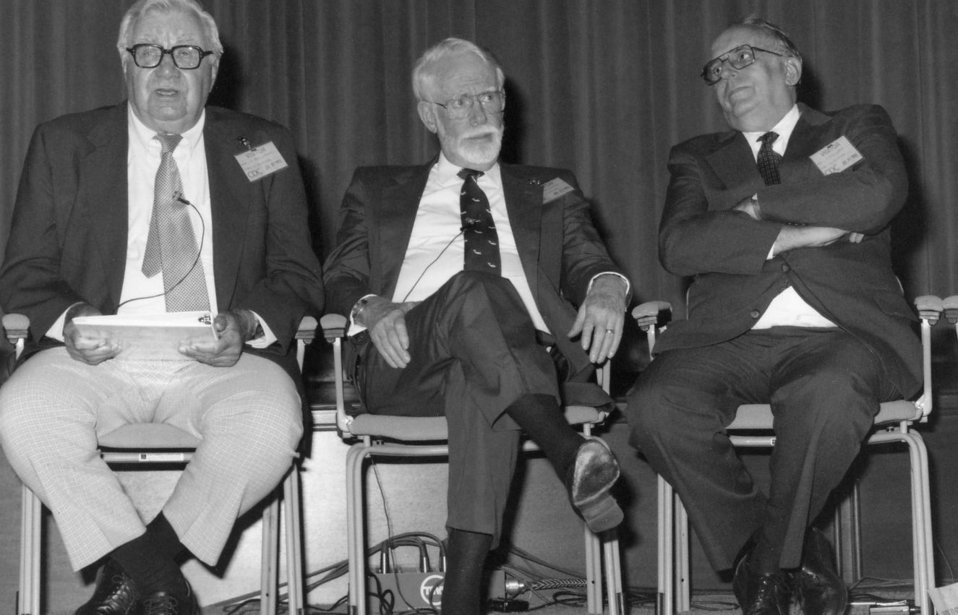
This 1992 photograph shows three former directors of the Centers for Disease Control and Prevention who were present during the 46th anniversary of the CDC.